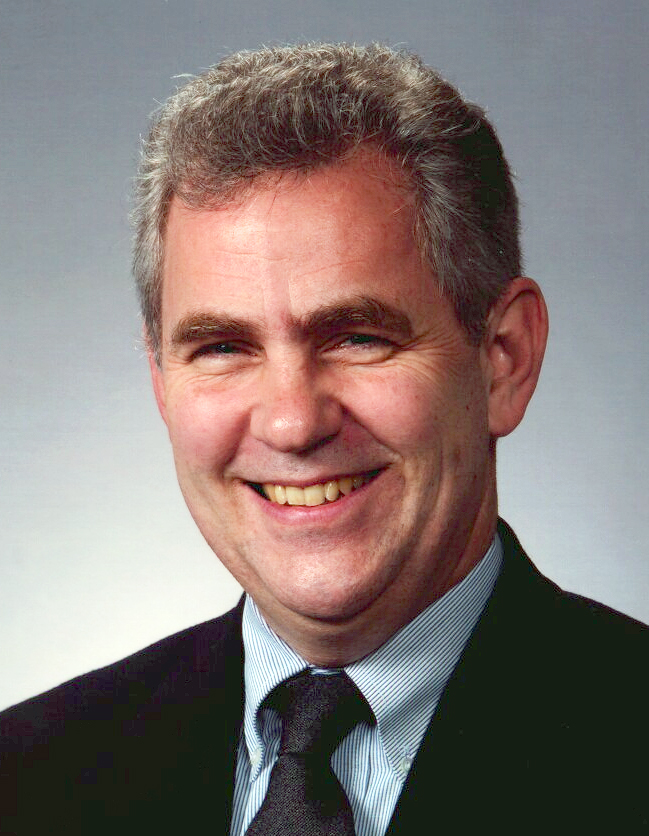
Dr. Richard Cavanaugh